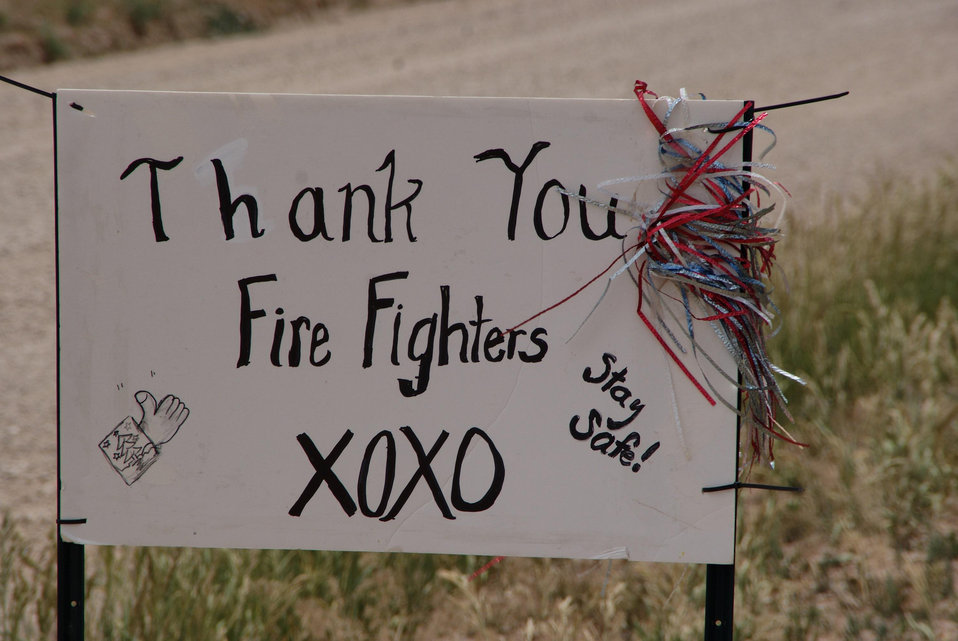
A sign sits near a home in the Walsenburg, CO area thanking firefighters for their hard work in protecting homeowner's property. The East Peak Fire located approximately 10 miles southwest of Walsenburg, CO began on Jun. 19, 2013 by lightning has consumed approximately 12, 996 acres. As of Jun. 28, 2013 the fire is 85% contained with 13, 521 acres burned. Due to the steep terrain, very heavy timber and continued dry conditions, there is still a potential for spot fires and thus, the fire will not reach 100 percent containment until sufficient interior mop up is complete.